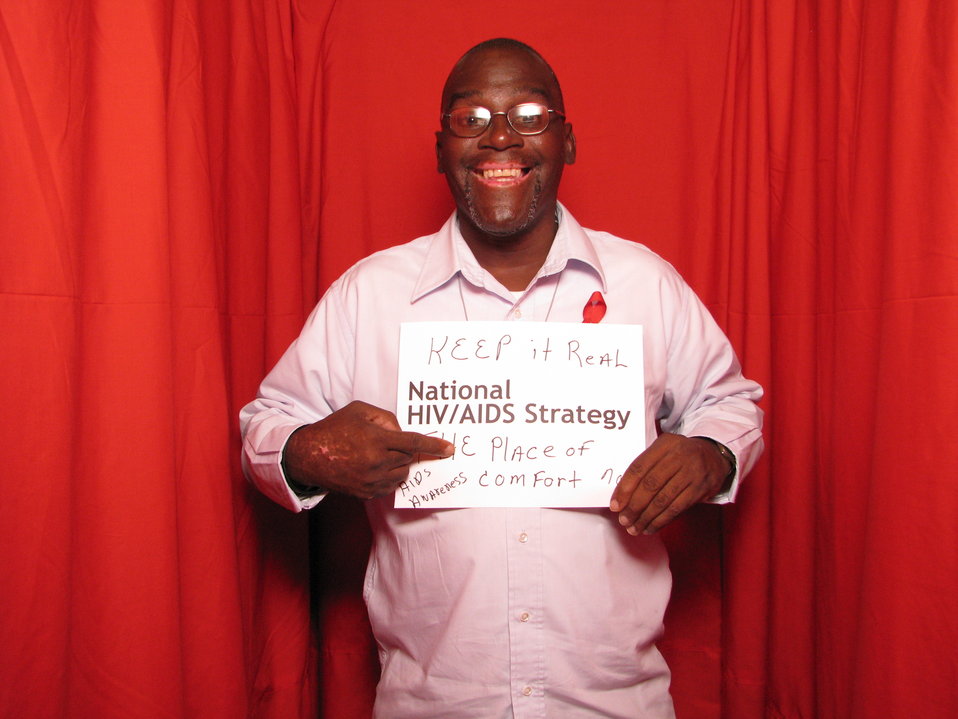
KEEP it Real National HIV/AIDS Strategy the Place of Comfort Now AIDS AWARENESS

From the AIDS.gov photo booth at the U.S. Conference on AIDS, September 2010 (Orlando, FL).